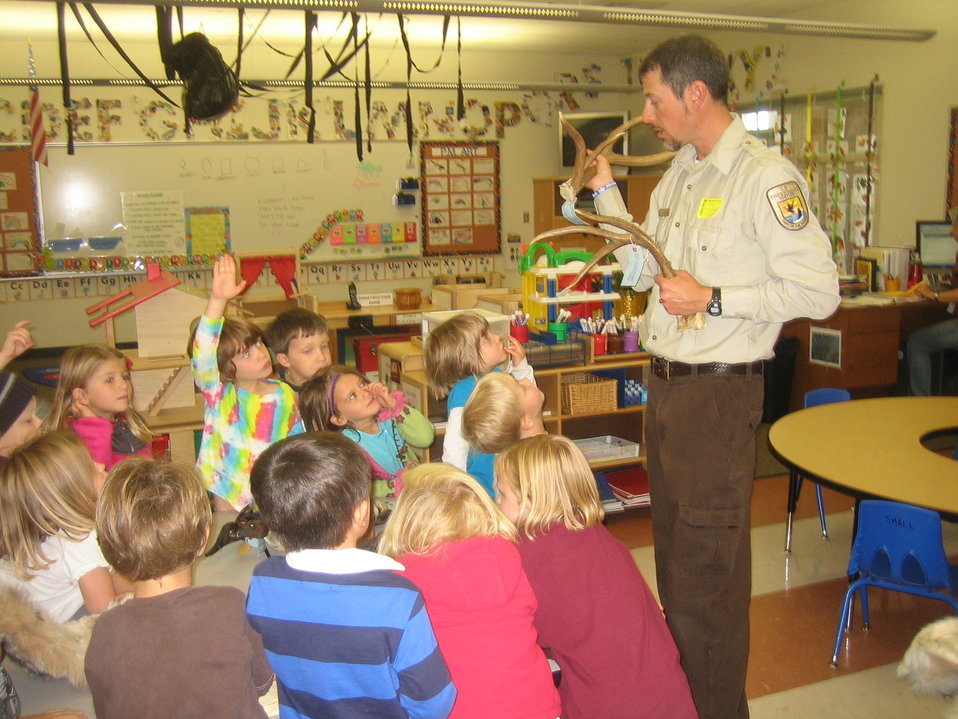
Scientists in the Community Program

U.S. Fish and Wildlife Service Mountain-Prairie Region Deputy ARD for External Affairs, Matt Kales, introduces early childhood education students at William Roberts Elementary School in Denver to some of Colorado's native and historic wildlife species.